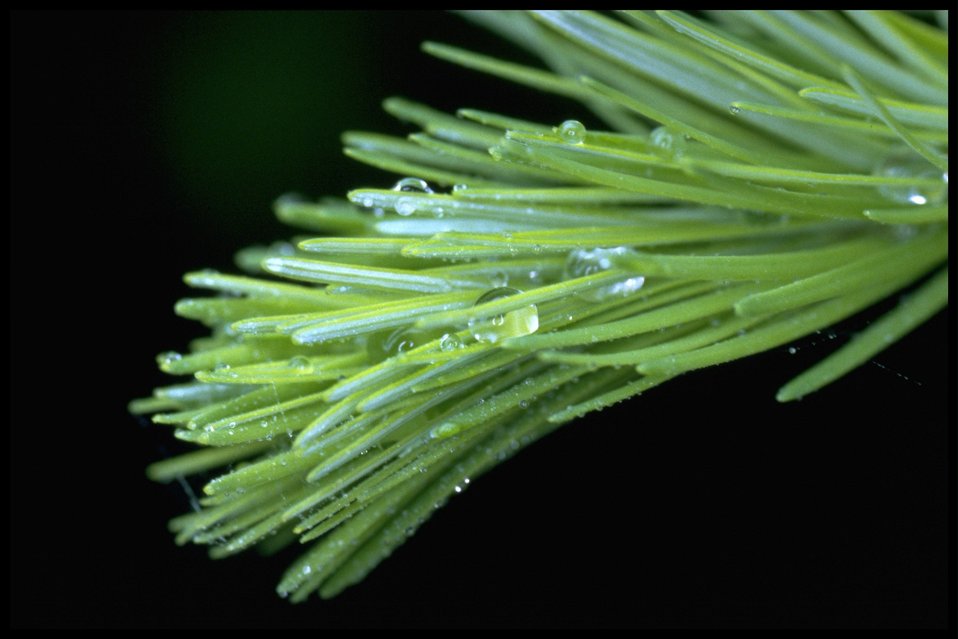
Closeup shot of new conifer needles.